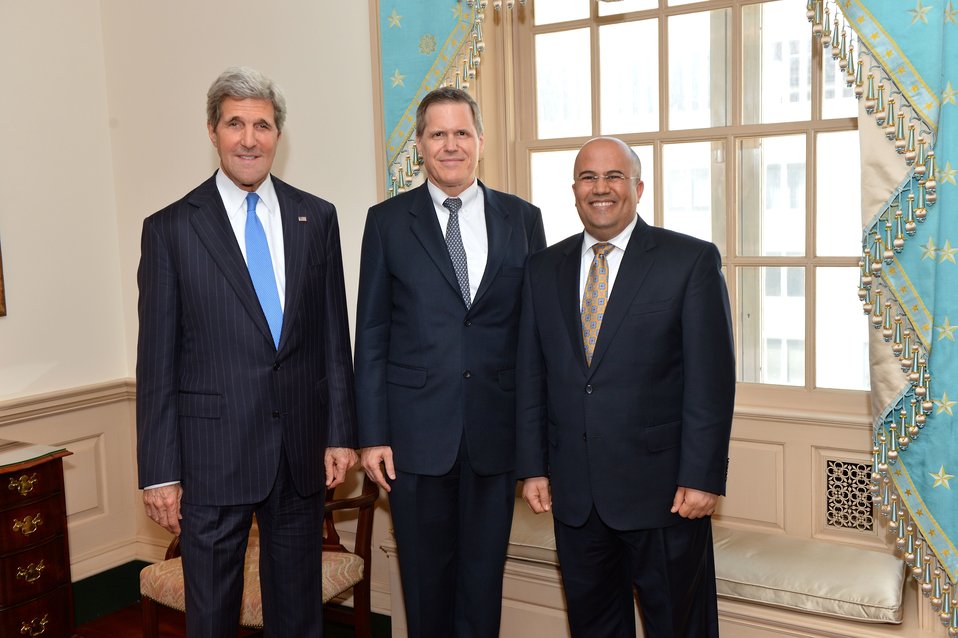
Secretary Kerry Poses for a Photo With Ambassador Tueller and Yemeni Charge d’Affaires Al-Sunaini

U.S. Secretary of State John Kerry poses for a photo with Ambassador Matthew Tueller and Adel Al-Sunaini, Charge d’Affaires of the Embassy of Yemen in Washington, D.C., before swearing in Tueller as the U.S. Ambassador to Yemen, at the U.S. Department of State in Washington, D.C., on May 8, 2014.